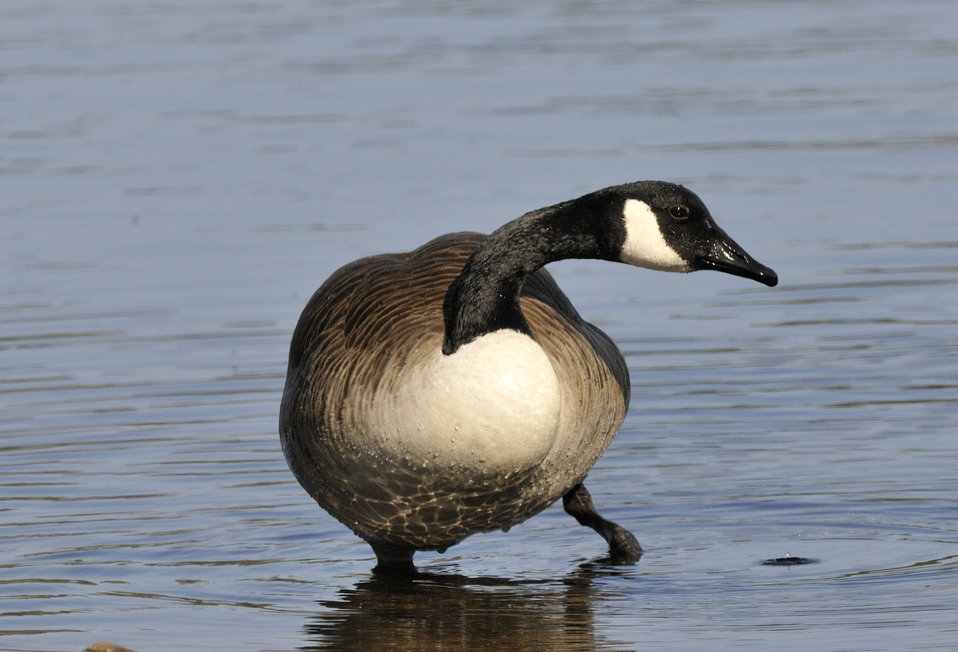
Canada Goose

Photographed in Provincetown, MA.